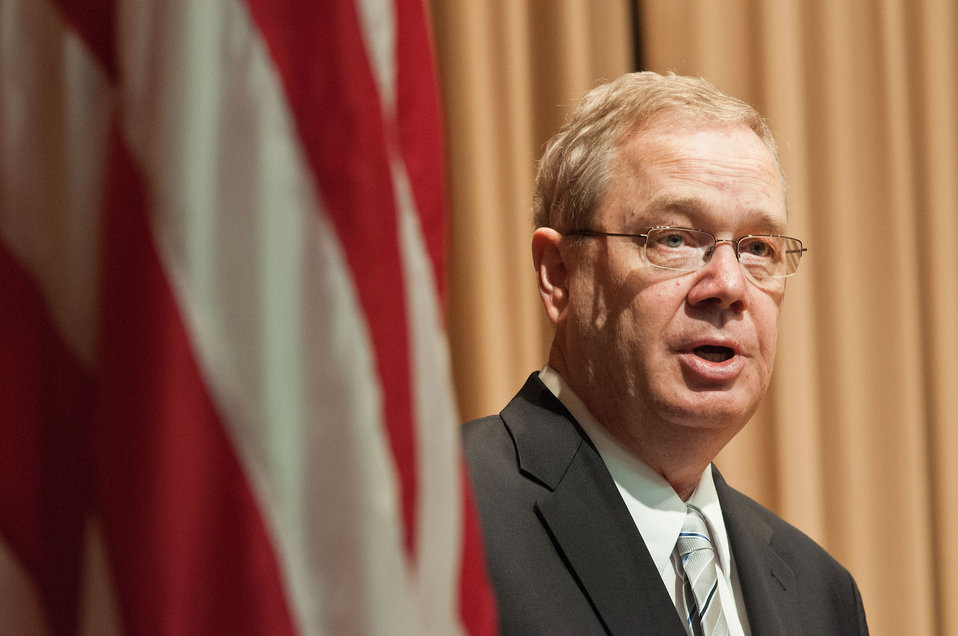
Agriculture Under Secretary for Rural Development Dallas Tonsager addresses employees during the United States Department of Agriculture Rural Development Cultural Transformation Day in Washington, D.C. on Thursday, July 12, 2012.